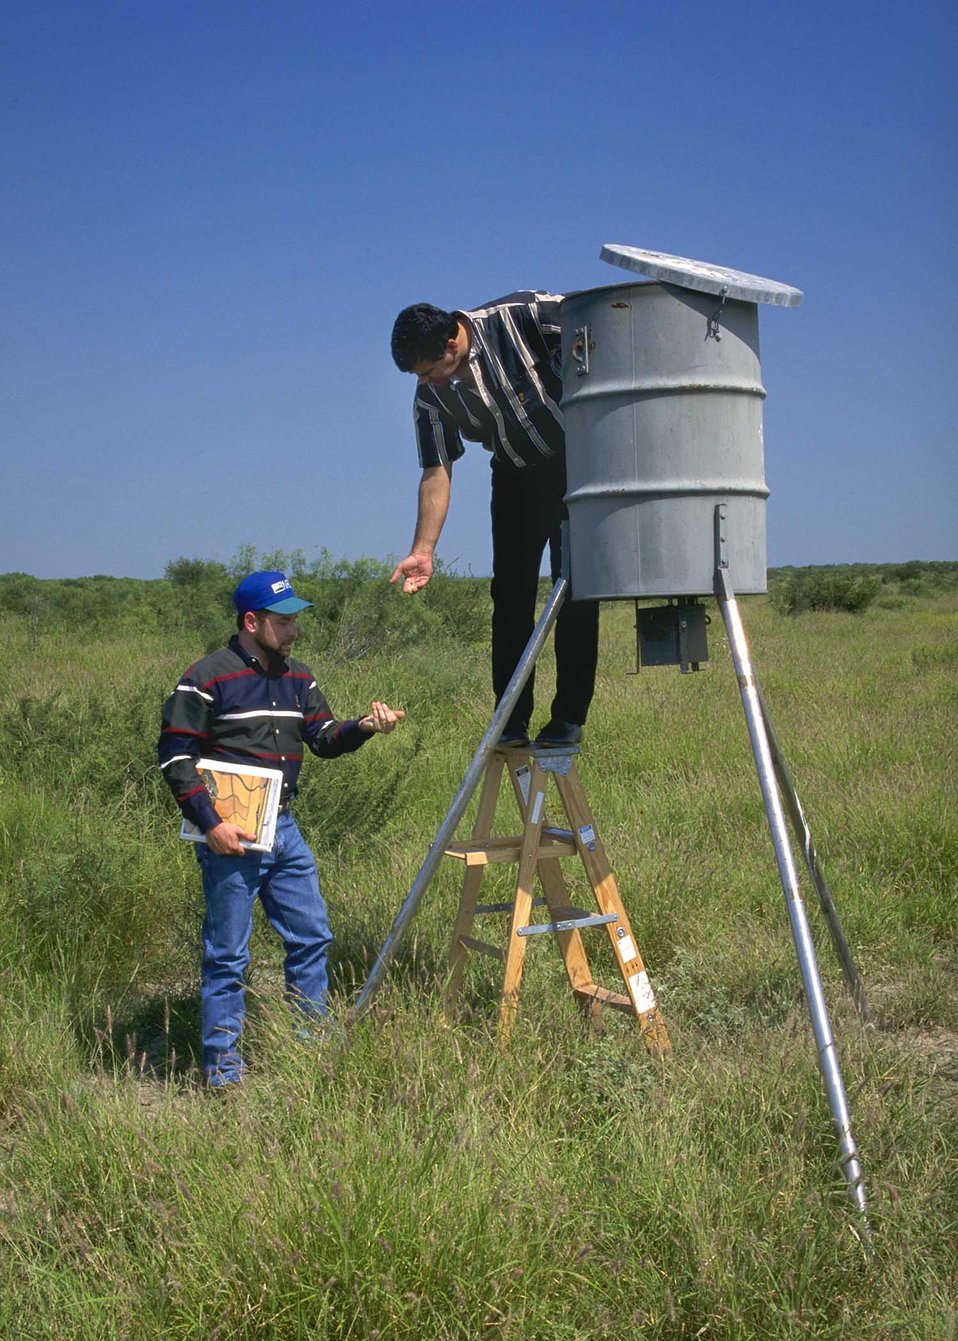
Flavio Garza (left), NRCS District Conservationist, discusses wildlife conservation with landowner from Laredo, TX. Landowner loads feed into a supplemental feeder for deer.